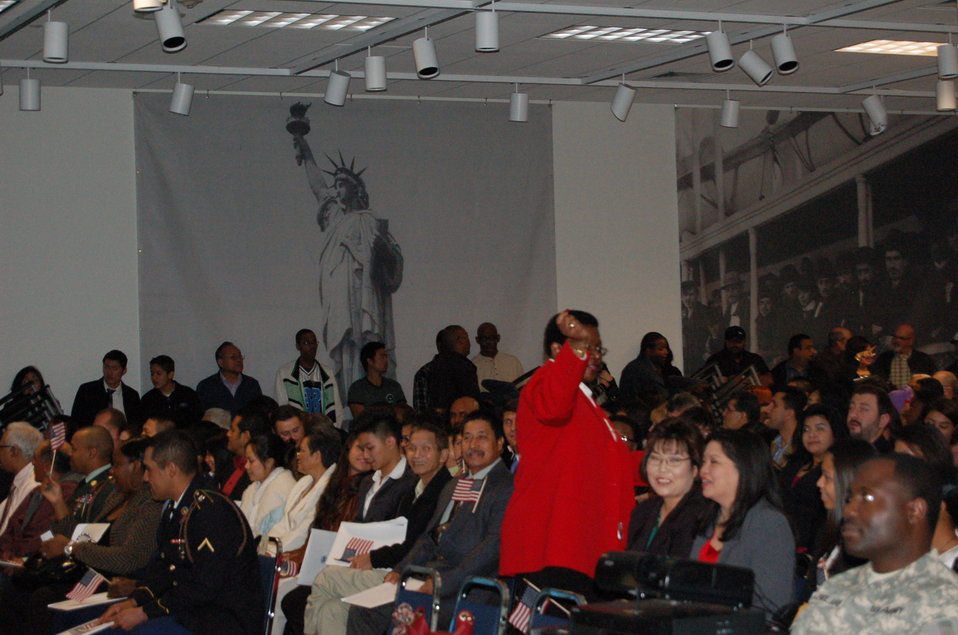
Naturalization Ceremony